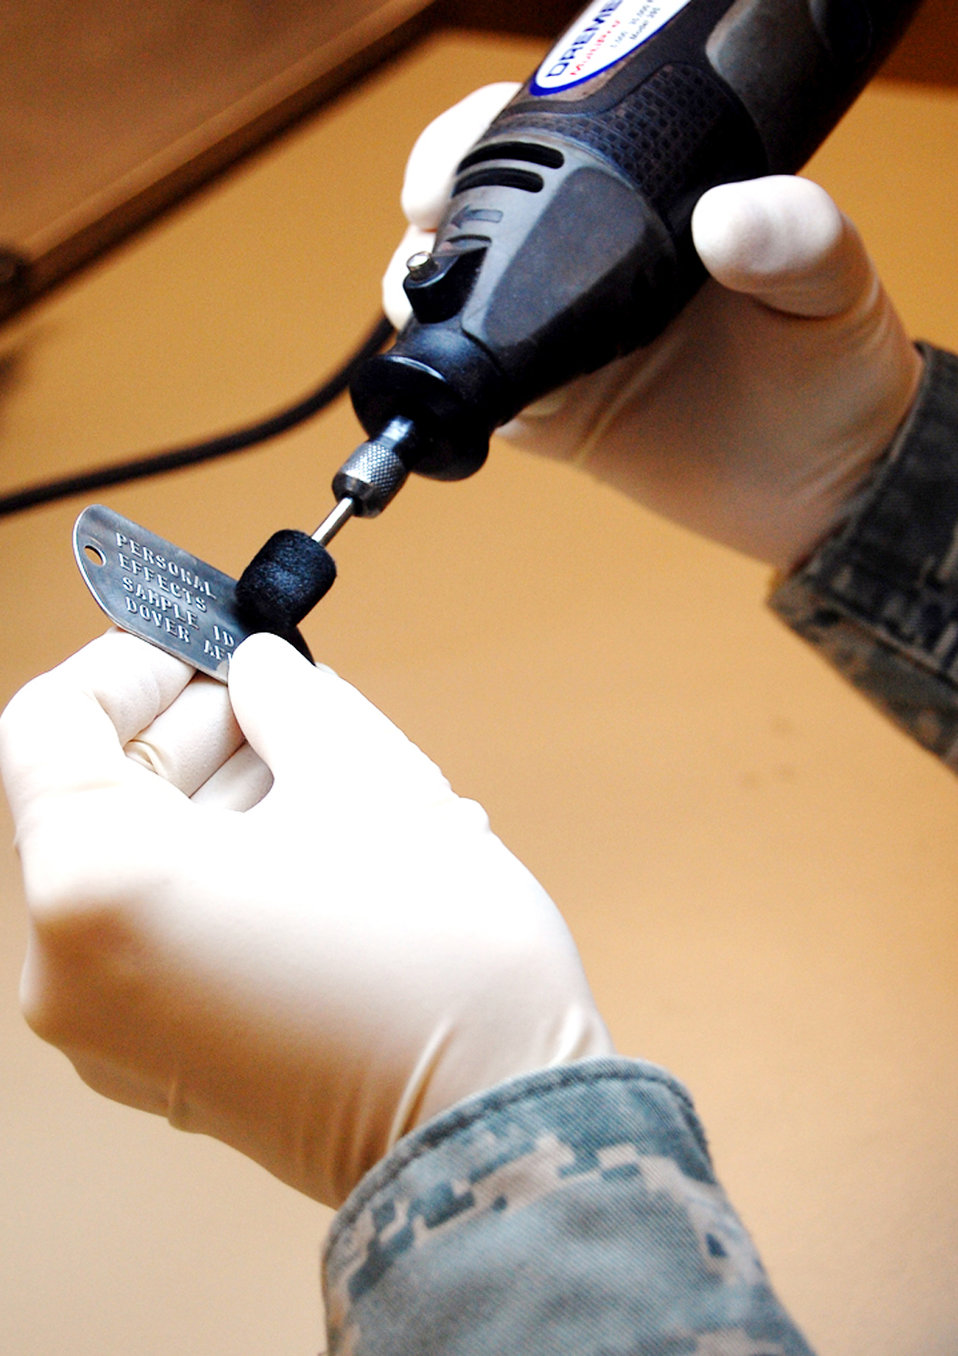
Air Force mortuary staff ensures dignity, honor for fallen

Master Sgt. Tracy Bailey cleans a dog tag at the personal effects section of the Air Force Mortuary Affairs Operations Center Feb. 25, 2010, at Dover Air Force Base, Del.